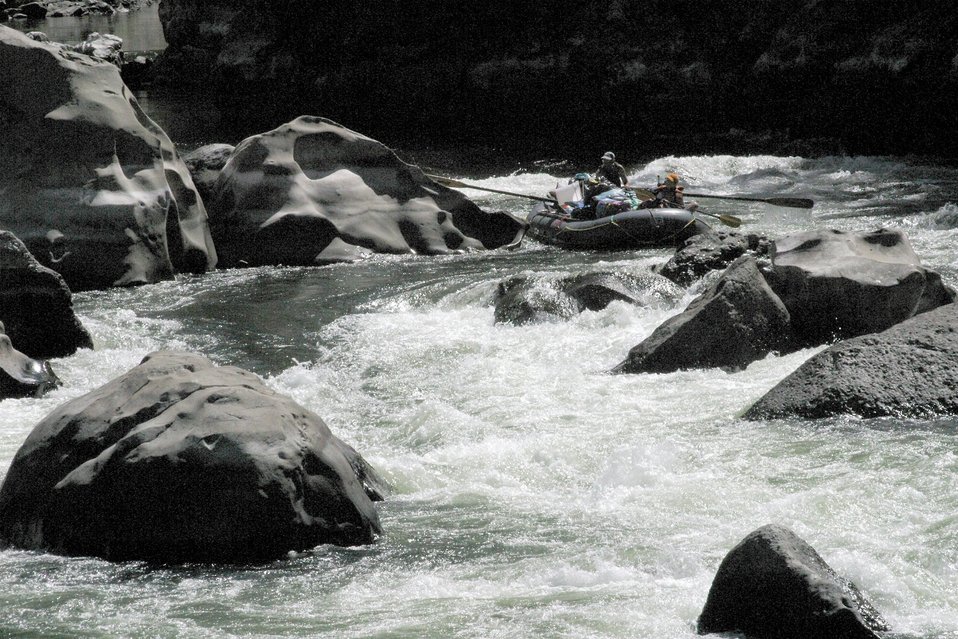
Boaters negotiate Blossom Rapids.